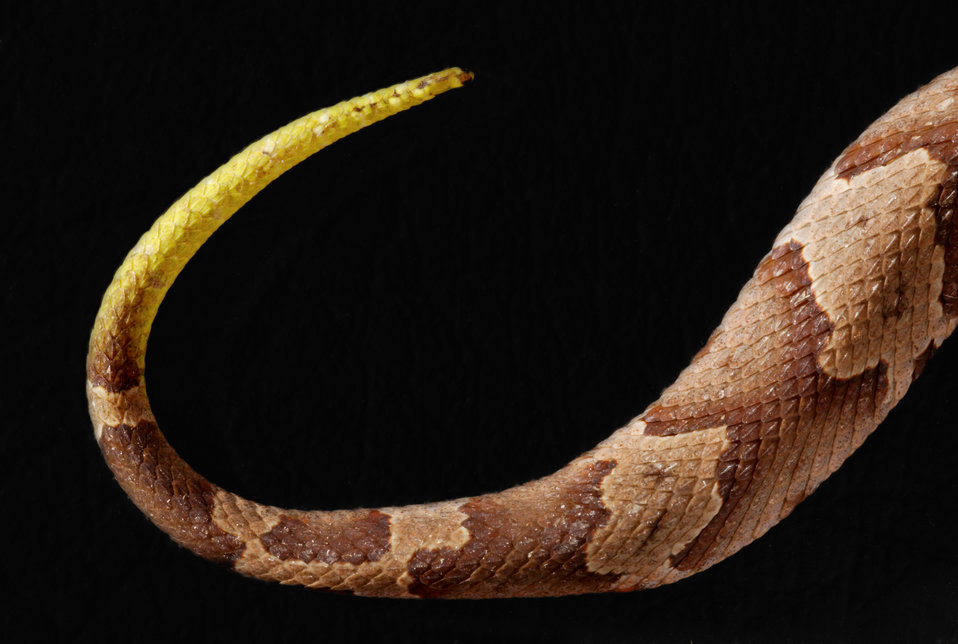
This 2008 photograph revealed a detailed view of a juvenile venomous 'Southern copperhead' snake's, Agkistrodon contortrix, skin surface, which was found coiled in a Decatur, Georgia basement.